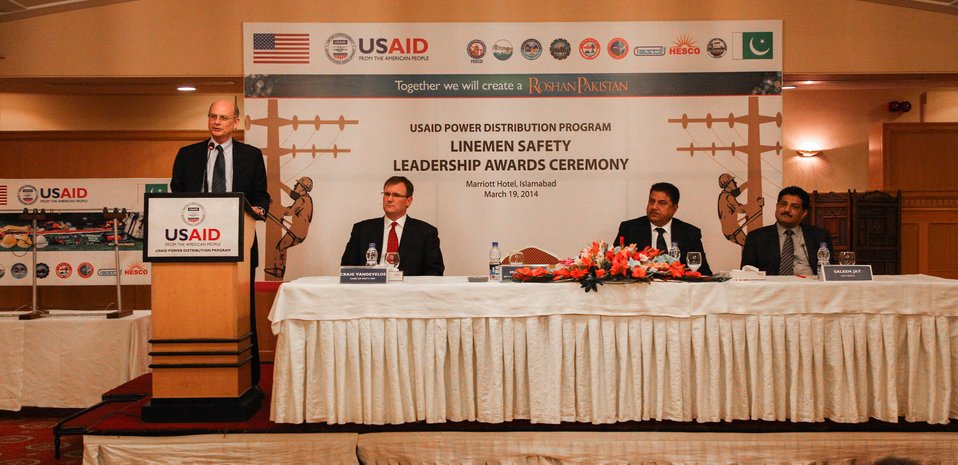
Michael Curtis Addressing the Audience on the Importance of Linemen Safety in Power Distribution Companies.